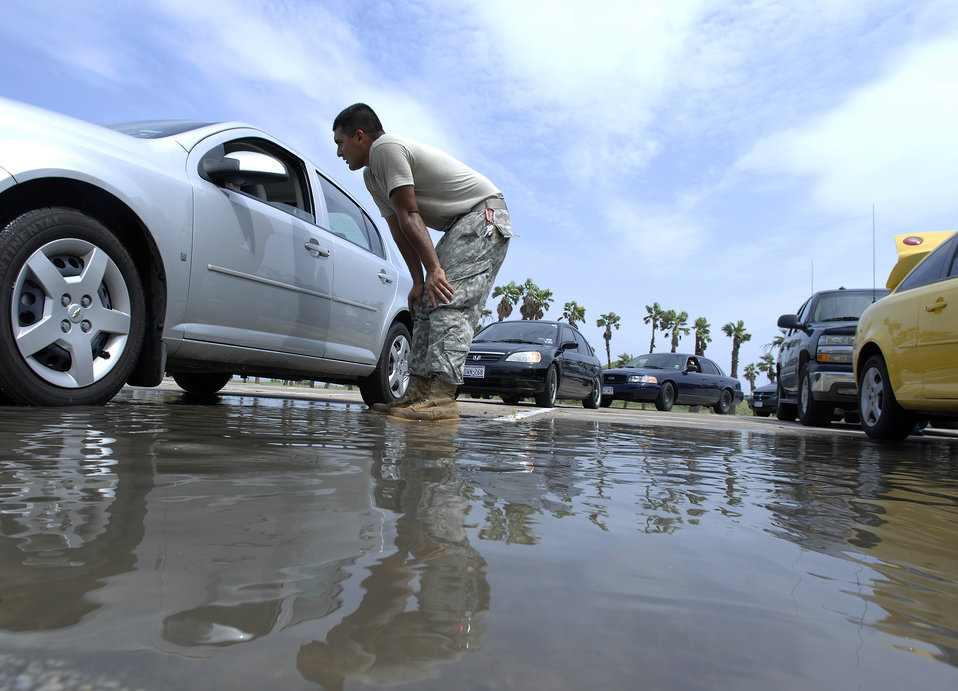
Hurricane Dolly

Army Spc. Jose Ramirez talks with a South Padre Island, Texas, resident looking for relief aid July 24 following Hurricane Dolly. Texas Task Force 1 members handed out nearly 4,000 bags of ice, 50 tons of water and 1,200 self-heating meals to hurricane vicitims. Specialist Ramirez is stationed with the 133rd Field Artillery at New Braunfels, Texas.